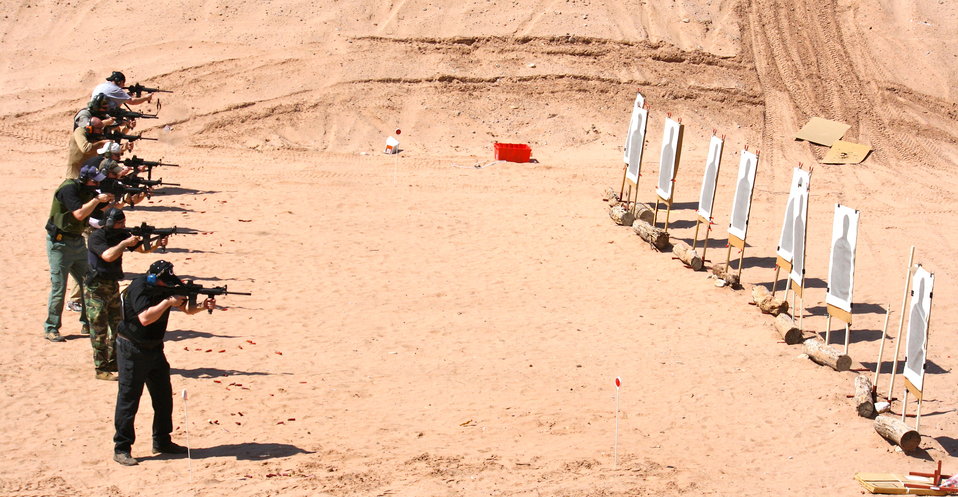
Agents Firing at Targets

Law Enforcement target practice at outdoor shooting range in Glastonbury, CT.